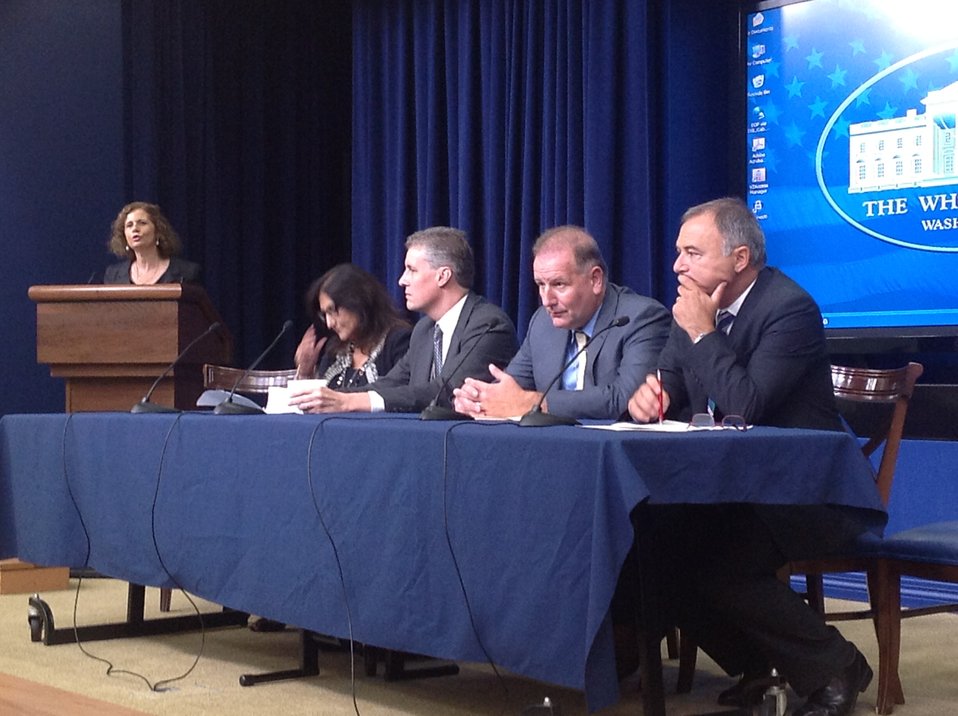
Pharmaceuticals Panel

WH 2012 World Hepatitis Day Event